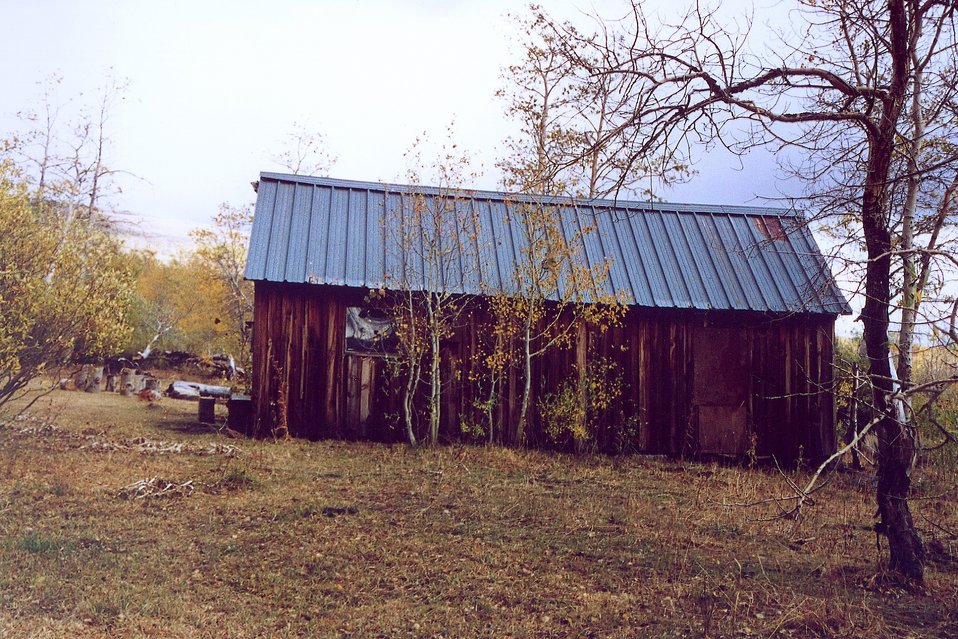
Nye Cabin, Nye Place, Steen's Mountain.